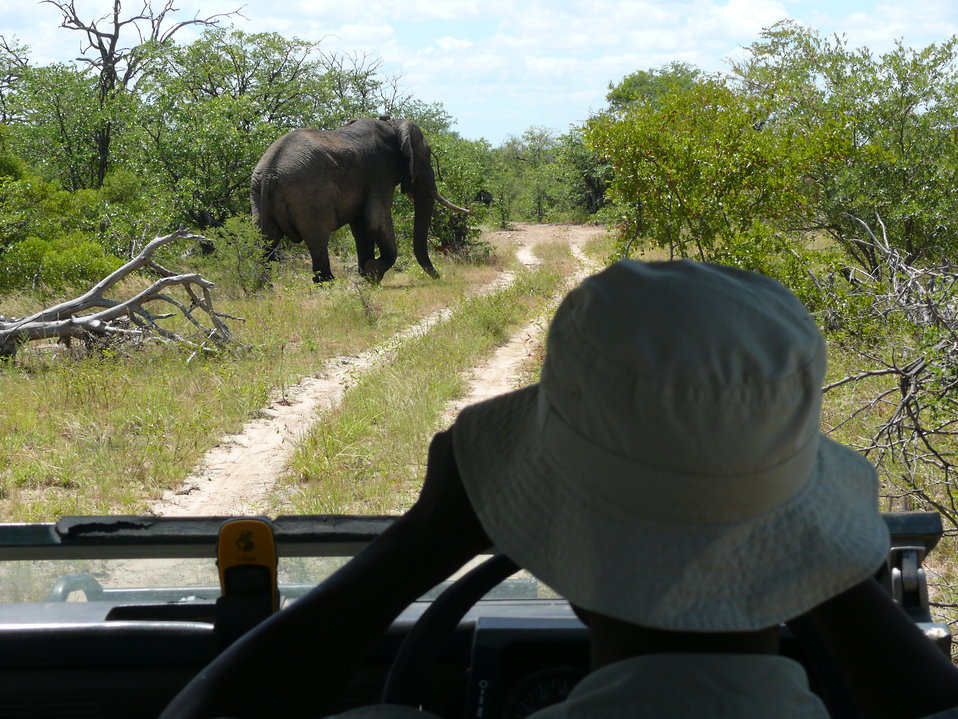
Elephant monitoring 2

Male elephants are shot by trophy hunters legally in some parts of Africa. Researchers are monitoring elephant behavior in and around hunting areas.